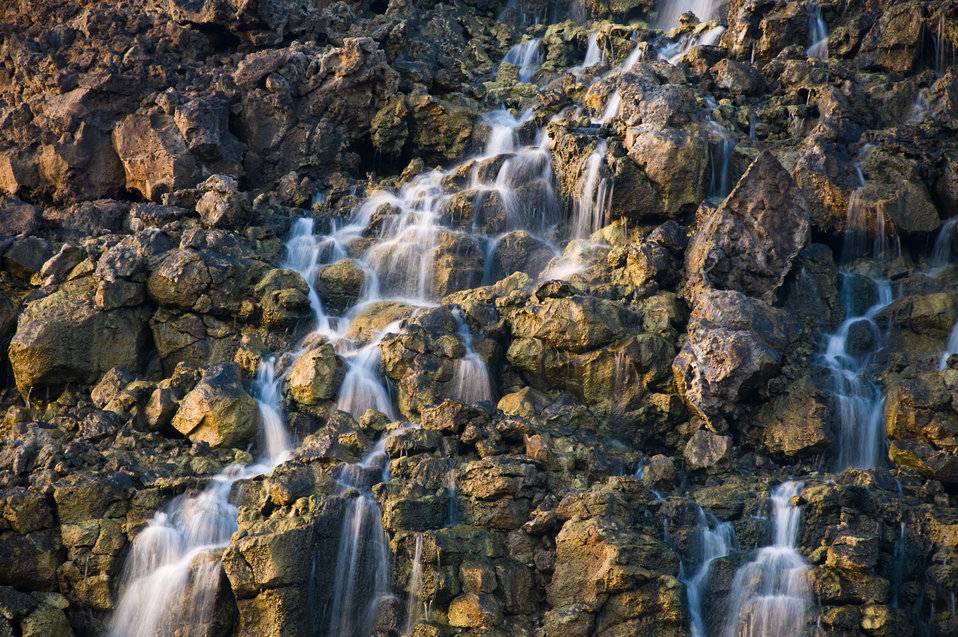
Ascension Island Green Way

Brine that was separated from the sea water by a flash steam desalination process falls from volcanic rock drop off to a runoff stream and then into the south Atlantic Ocean surrounding Ascension Island, home of the 45th Operations Group Detachment 2, Ascension Auxiliary Airfield (AAF), on June 28. 2009. This is part of the self-sufficient, power, water and waste infrastructure of the base.